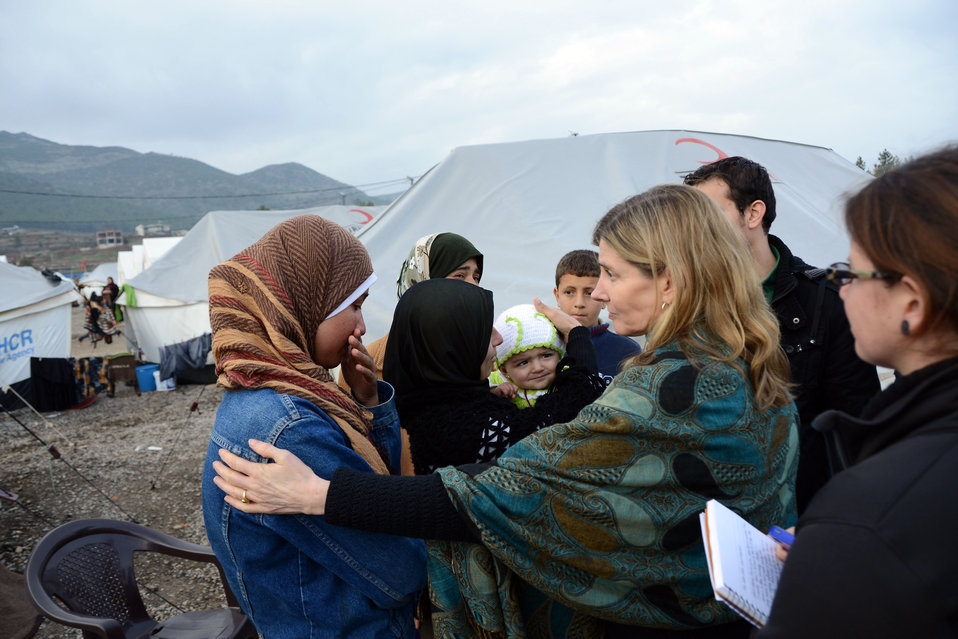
USAID Assistant Administrator Lindborg Interacts With Syrian Refugees

USAID Assistant Administrator for Democracy, Conflict, and Humanitarian Assistance Nancy Lindborg interacts with Syrian refugees at Islahiye Refugee Camp in Turkey on January 24, 2013.